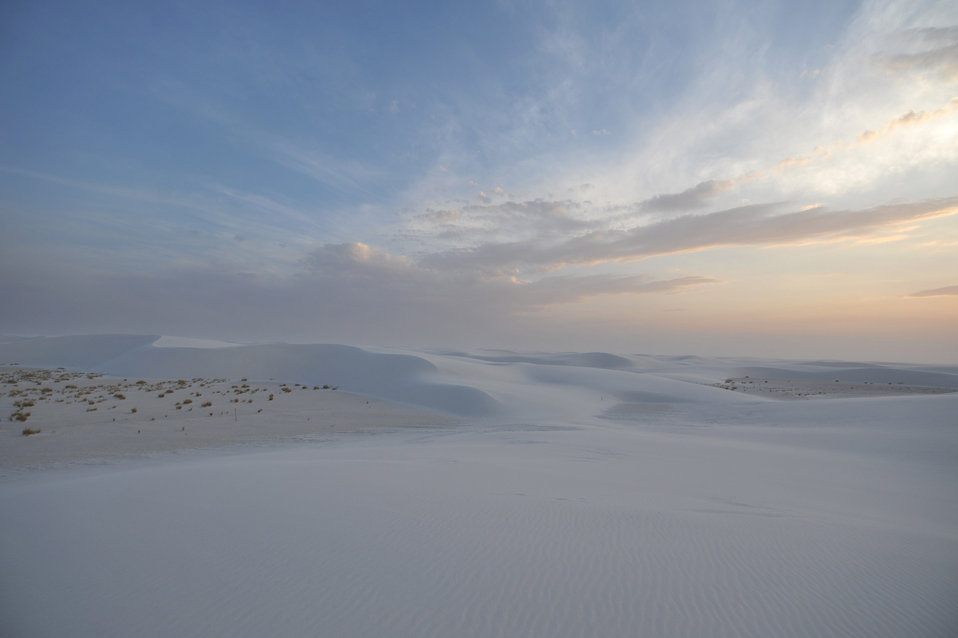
White sands 7

White sands national monument,new mexico.